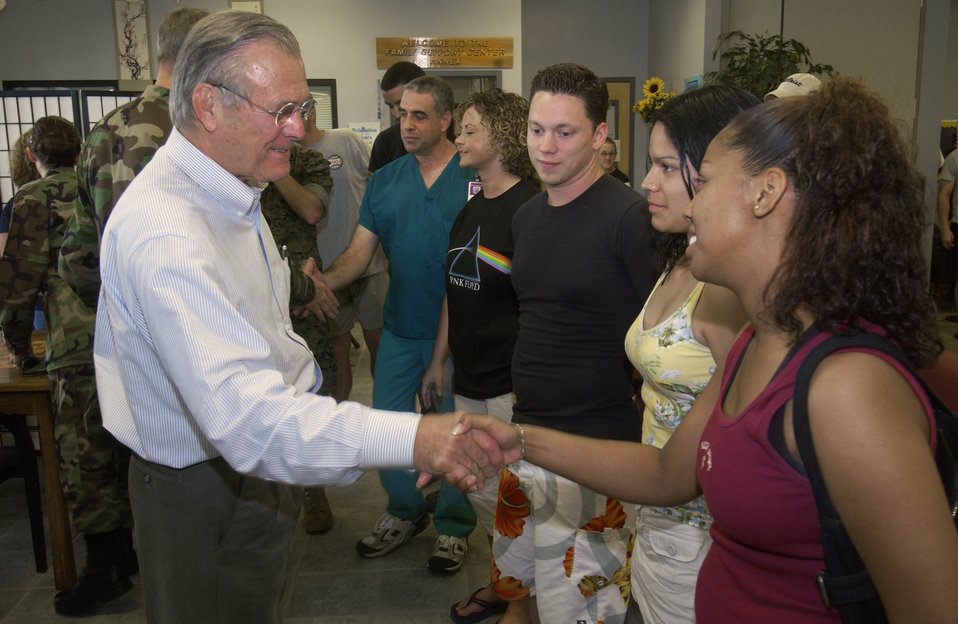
Hurricane Katrina

KEESLER AIR FORCE BASE, Miss. -- Secretary of Defense Donald H. Rumsfeld offers encouraging words to people here Sept. 4. Most of the families have lost their homes and are evacuating the area.